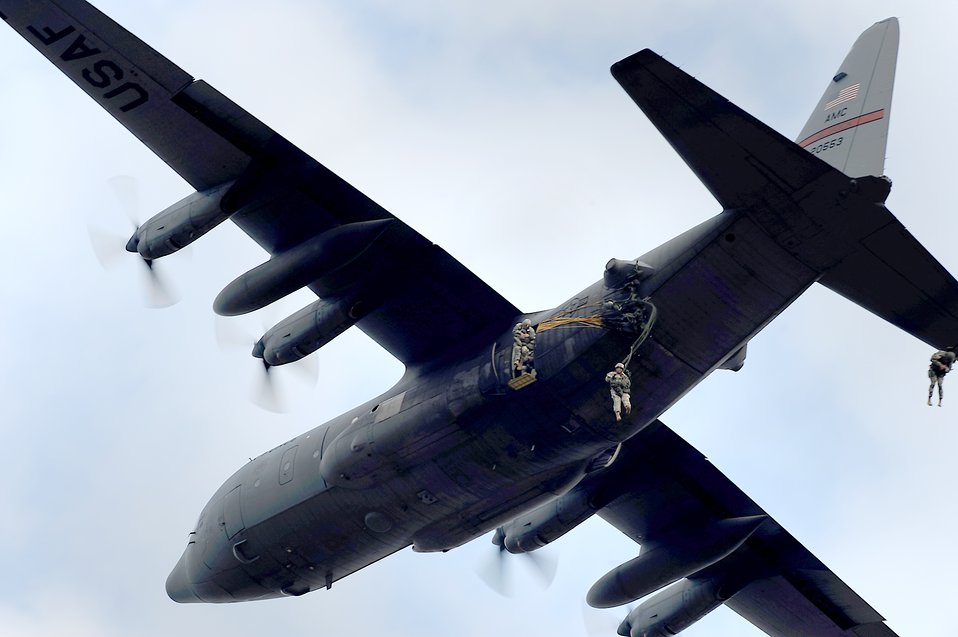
Joint Forces Entry Exercise

Soldiers jump from the troop door of a C-130 Hercules over a drop zone during airborne operations Sept. 12, 2010, at Fort Bragg, N.C. Soldiers are assigned to the 82nd Airborne Division at Fort Bragg.